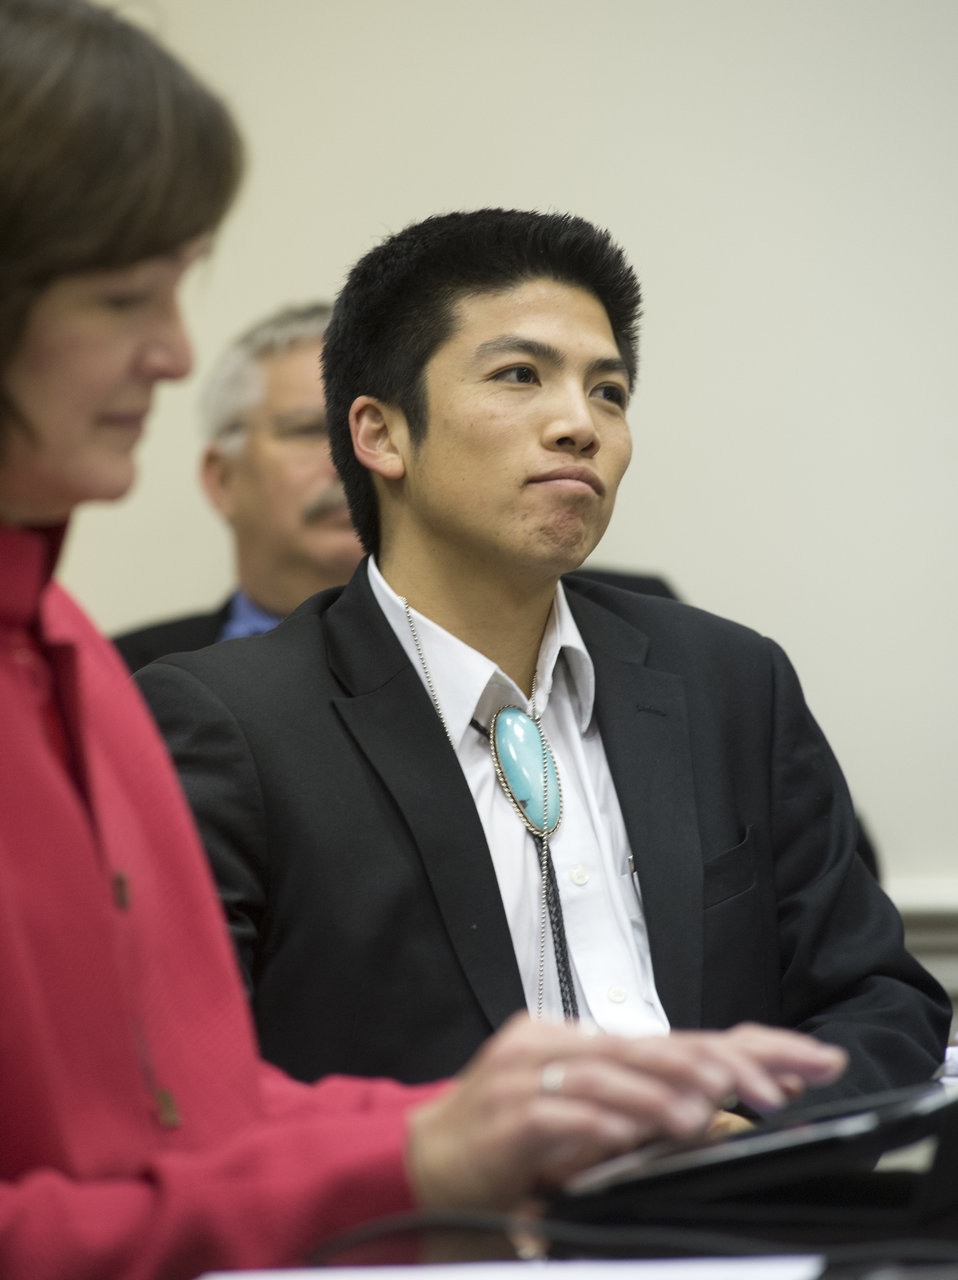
U.S. Department of Agriculture’s (USDA) Office of Tribal Relations (OTR) Leslie Wheelock and Government Relations Advisor for Kilpatrick Townsend, D.C. PaaWee Rivera listen to Agriculture Deputy Secretary Krysta Harden speak at a roundtable discussion on Agriculture, Community and Economic Development Opportunities in Indian Country with tribal leaders at the U.S. Department of Agriculture in Washington, D.C. on Tuesday, Nov. 12, 2013.